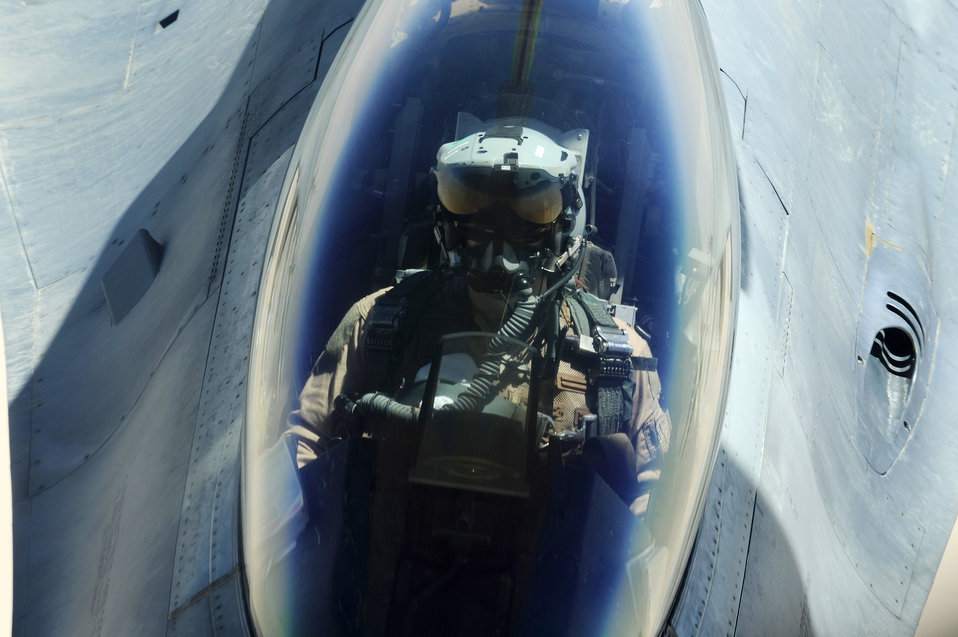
Gas and go

An F-16 Fighting Falcon flying over Iraq moves in behind a KC-135 Stratotanker July 28 to receive fuel before continuing with a mission to support Operation Iraqi Freedom.